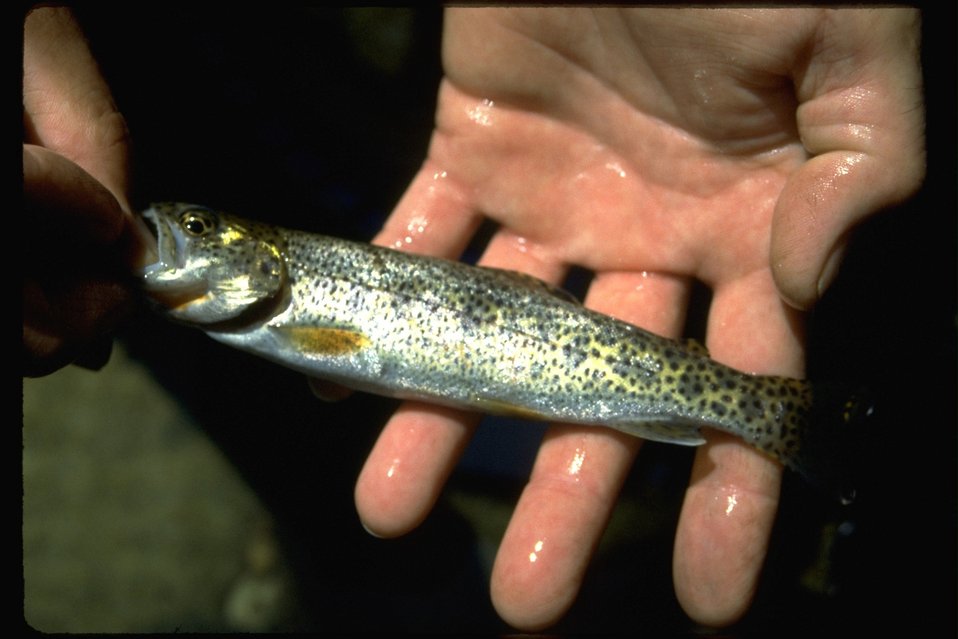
Macro shot of rainbow trout.